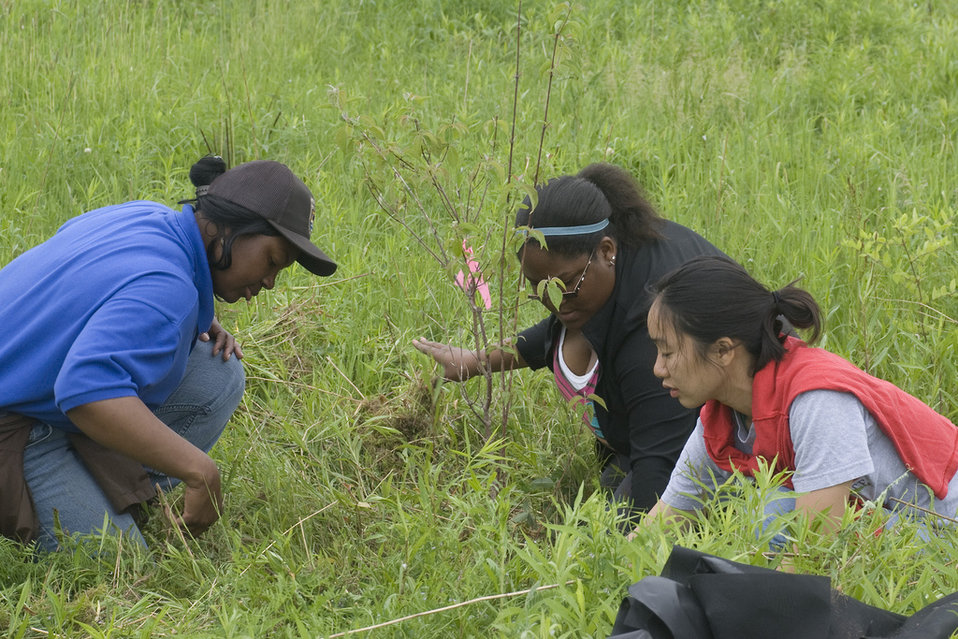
Service employee and students planting trees

U.S. Fish and Wildlife Service